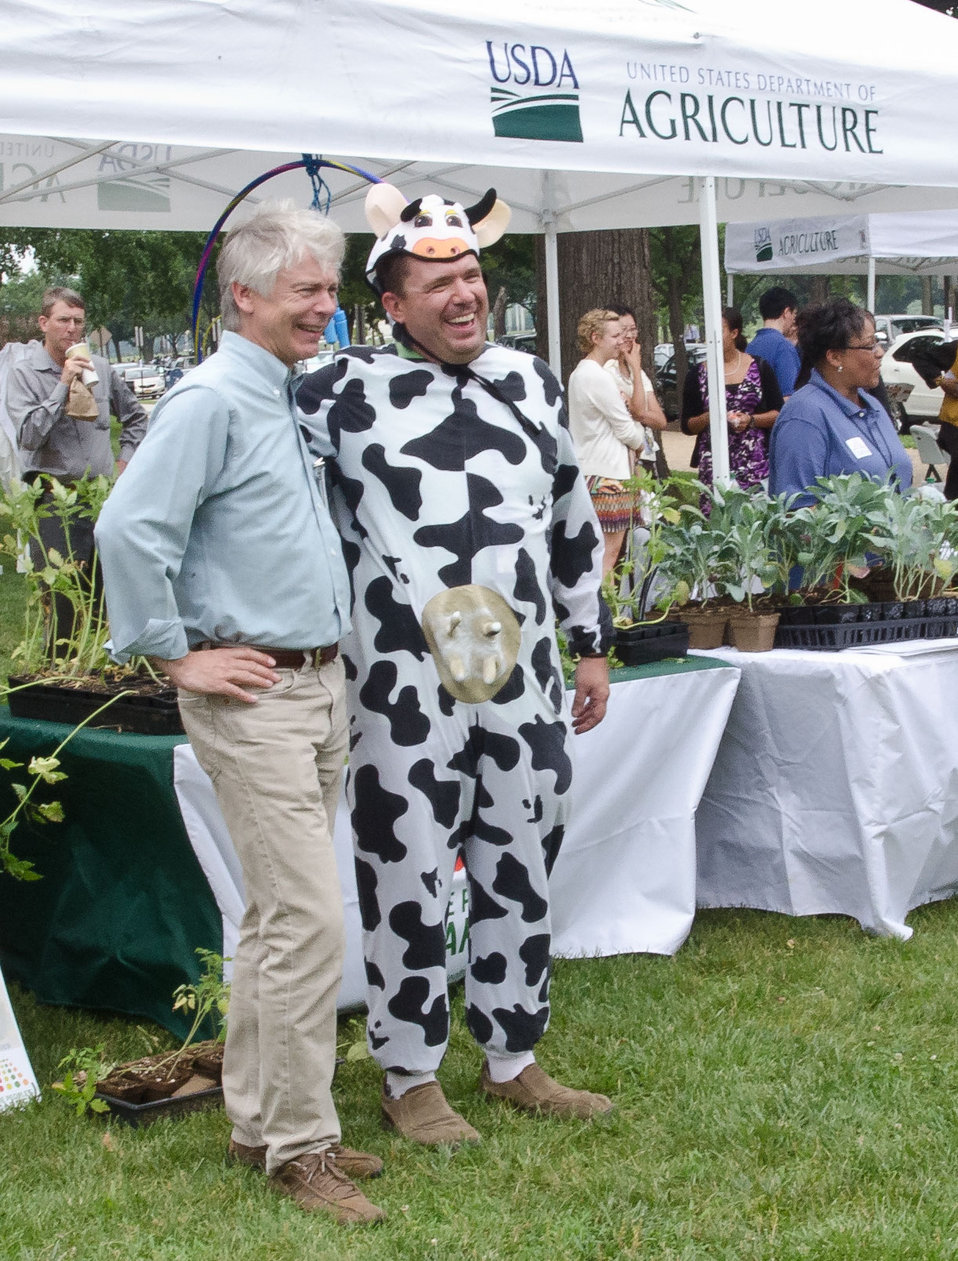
Agriculture Marketing Service, Dairy Program Marketing Research Specialist John Galbraith, dressed in a cow costume to attract attention to departmental dairy programs and to pose for a photos and to talk about dairy programs, at the U.S. Department of Agriculture (USDA) Fresh vegetables from C & T Produce at the U.S. Department of Agriculture (USDA) summer farmers market opening of the 17th season at the USDA Whitten Building east parking lot in Washington, D.C., on Friday, May 31, 2012. This year's theme is Grow, Healthy, Eat Healthy & Be Healthy. USDA and Fuel Up to Play 60, in partnership with the National Dairy Council and the National Football League, invited residence, visitors and local school children to participate in opening day activities. Hip Hop Public Health featuring Easy A.D. from Cold Crush Brothers and disk jockey Artie Green play music and invite people to get up on stage to dance or hula hoop to get active. D.C. Truck Farm help people know from what plants, that certain herbs, fruit and produce come from by giving tail-gate tours of the garden growing in the bed of their pickup truck. The Peoples Garden Initiative and USDA Executive Master Gardeners gave away a variety of fruit and produce seedlings to include the Tomato ‘Abraham Lincoln’ in celebration of the USDA 150th Anniversary and to share their harvest. New features for 2012 include an on-site sign language interpreter, a hand washing station, and a USDA-certified organic vendor. Other products selling today are fresh fruits, vegetables, herbs, baked goods, meats, kettle popcorn, local honey, hand-made soap and more.